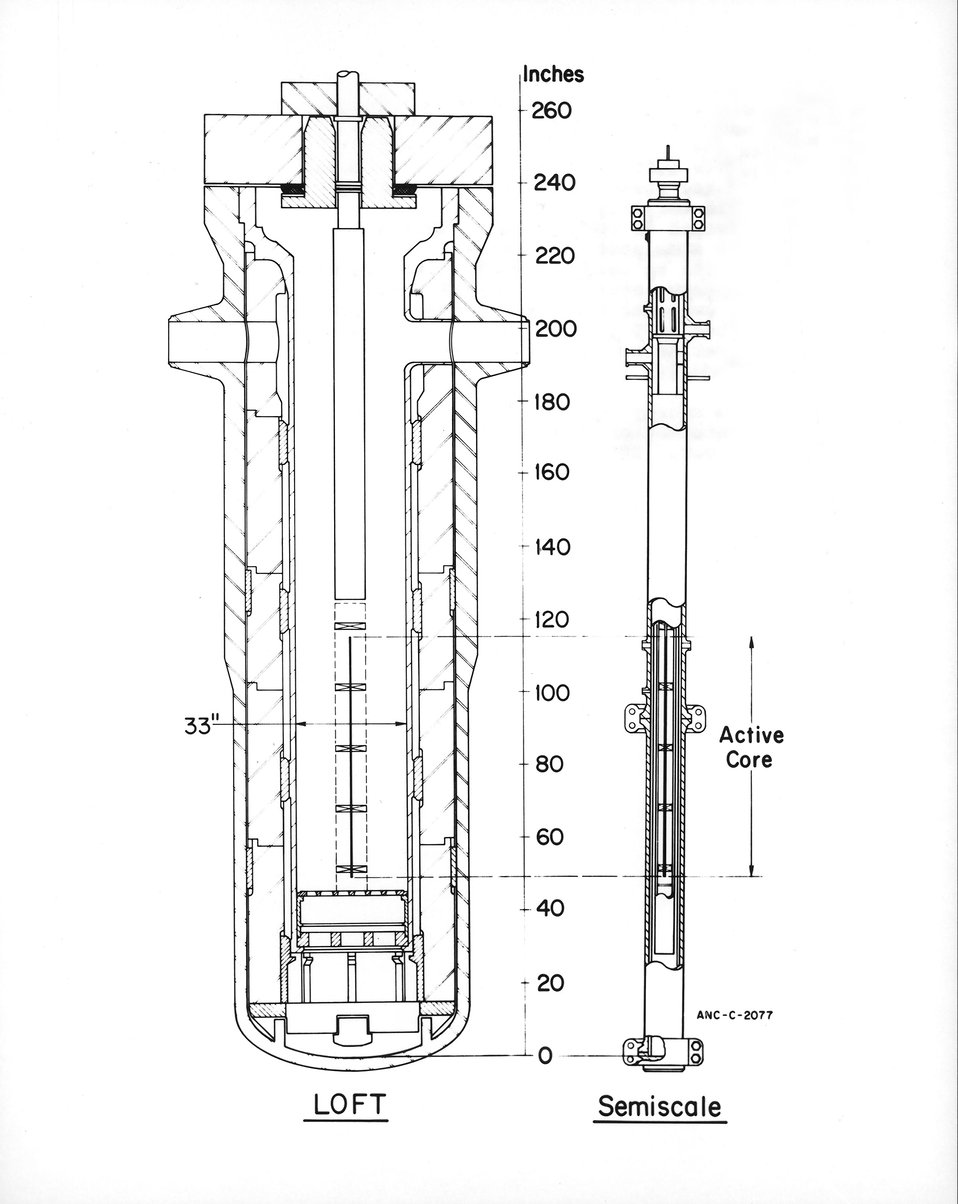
Drawings provide a comparison between the 1-1/2-loop semiscale test experimental system and the Loss of Fluid Test Facility (LOFT). While LOFT is a 1/60th-scale version of a full-sized pressurized-water reactor, the semiscale facility is on 1/30th the power and volume of LOFT. The semiscale reactor-core simulator is electrically heated and will be used for small-scale tests of an elementary nature for initial analytically model evaluation and development. The reactor-heated LOFT will be used to further develop or refine the loss-of-coolant analytical models. c. 1974